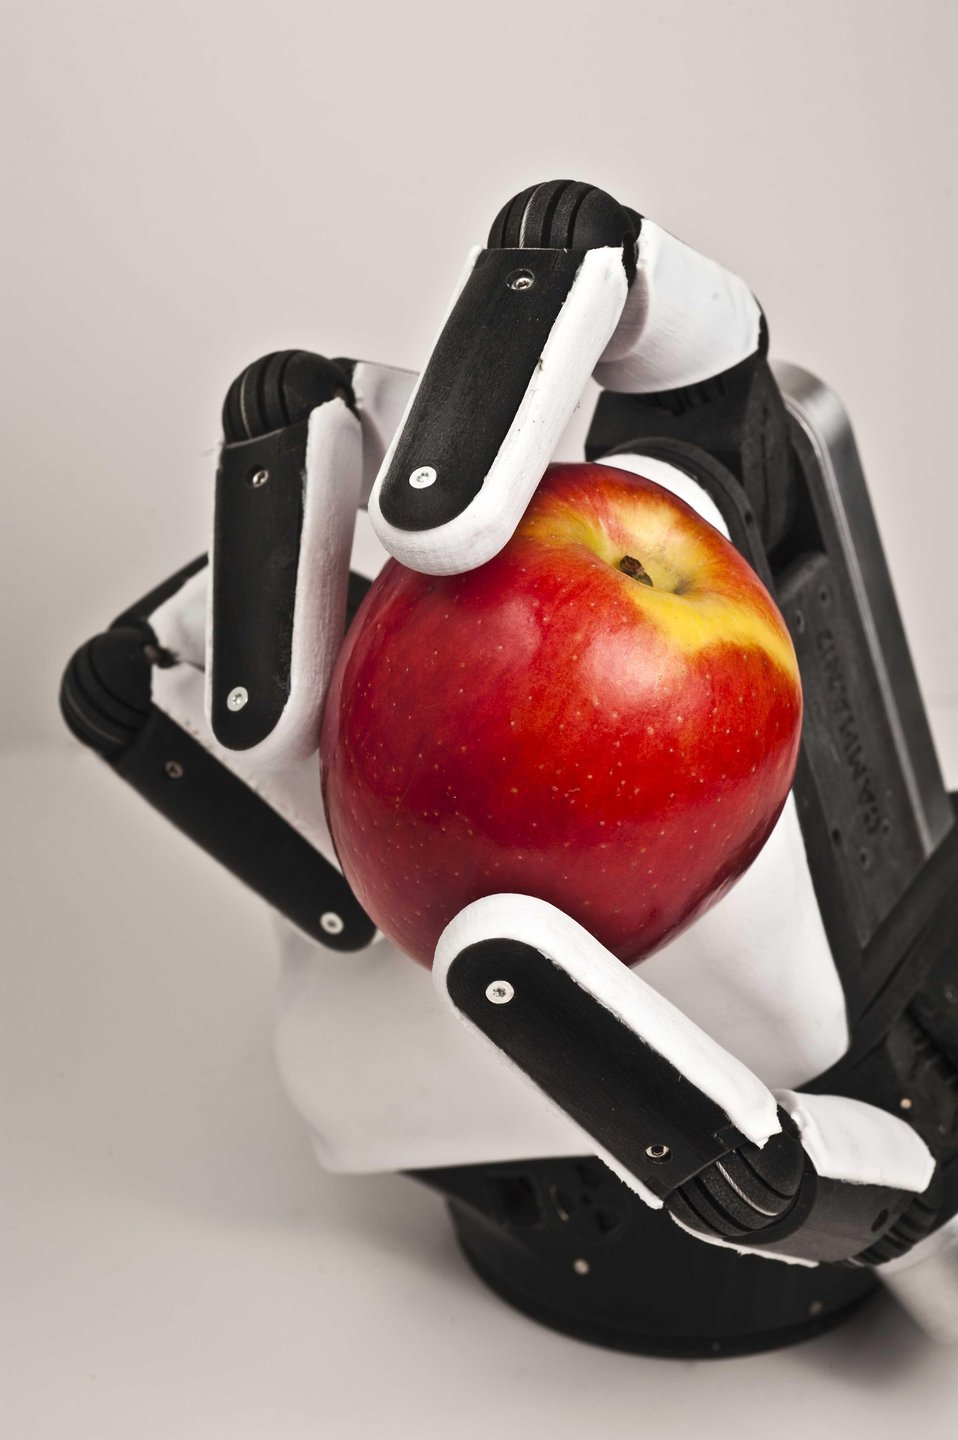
Sandia National Laboratory has developed a cost-effective robotic hand that can be used in disarming Improvised Explosive Devices, or IEDS.

The Sandia Hand addresses challenges that have prevented widespread adoption of other robotics hands including cost, durability dexterity and modularity. The Sandia Hand is funded by the Defense Advanced Research Projects Agency.